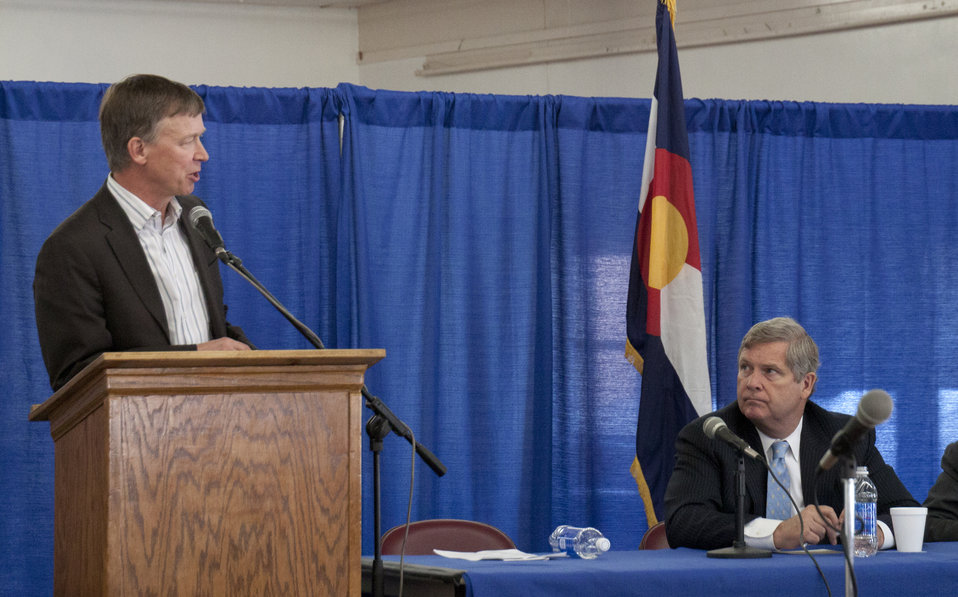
Colorado Governor John Hickenlooper makes remarks, as Agriculture Secretary Tom Vilsack looks on at the Forum and Panel Discussion “Trade and Exports: Bringing Rural and Urban Development Together” at the Colorado State Fairground, 4H Auditorium in Pueblo, CO., on Thursday, October 11, 2012.